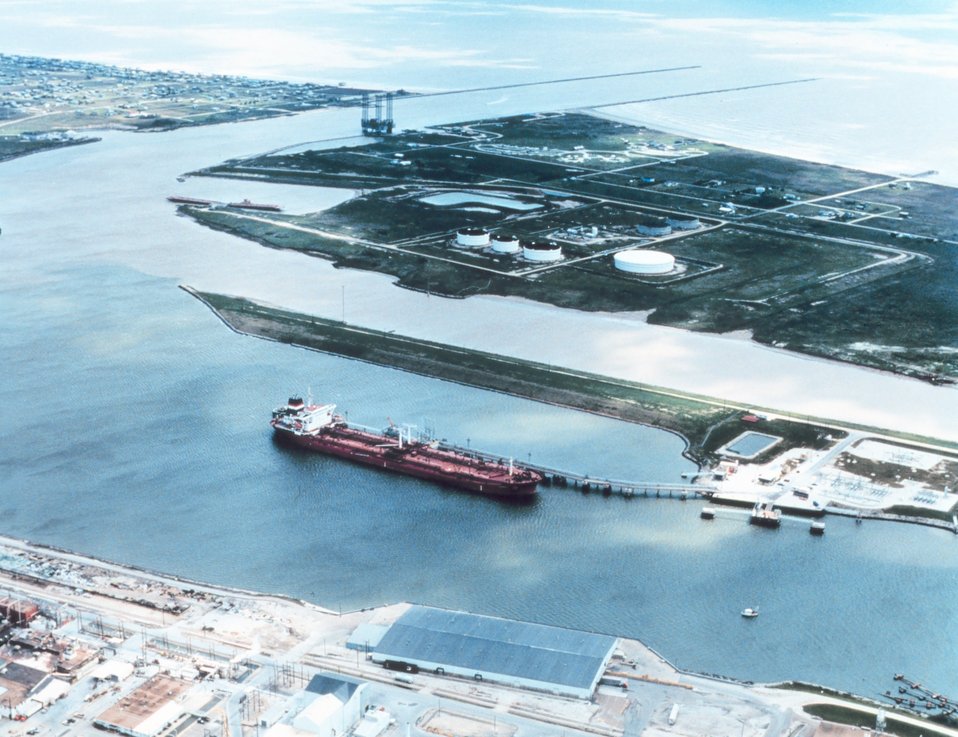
2857 North Latitude 9522 West Longitude.